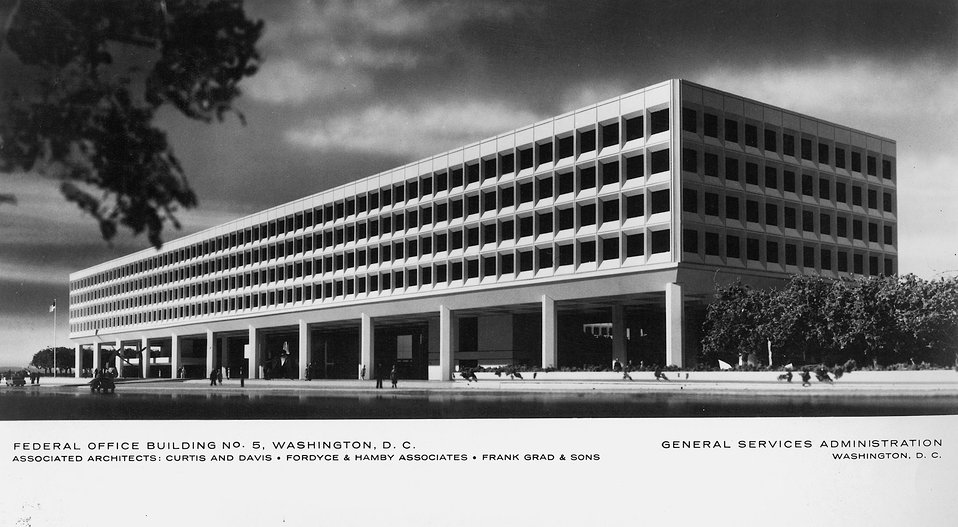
Federal Office building No. 5 Washington DC